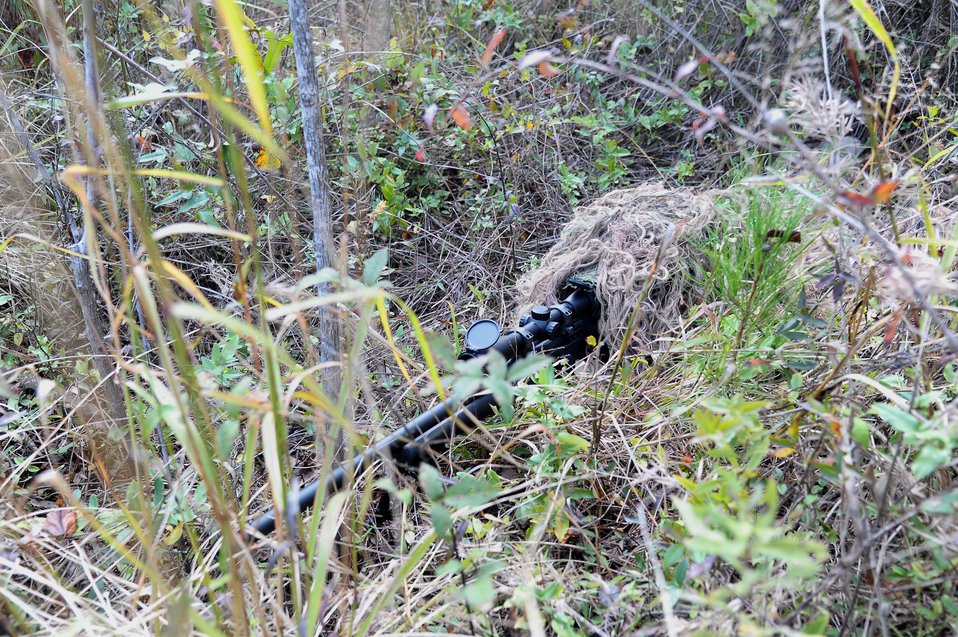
In the green

Airman 1st Class Tiffani Potter, 14th Security Forces Squadron lies prone in a brush-covered area on Columbus Air Force Base to demonstrate the effectiveness of her ghille suit on Oct. 26. Local live foliage is added to the suit to allow the sniper to better blend into the current surroundings.